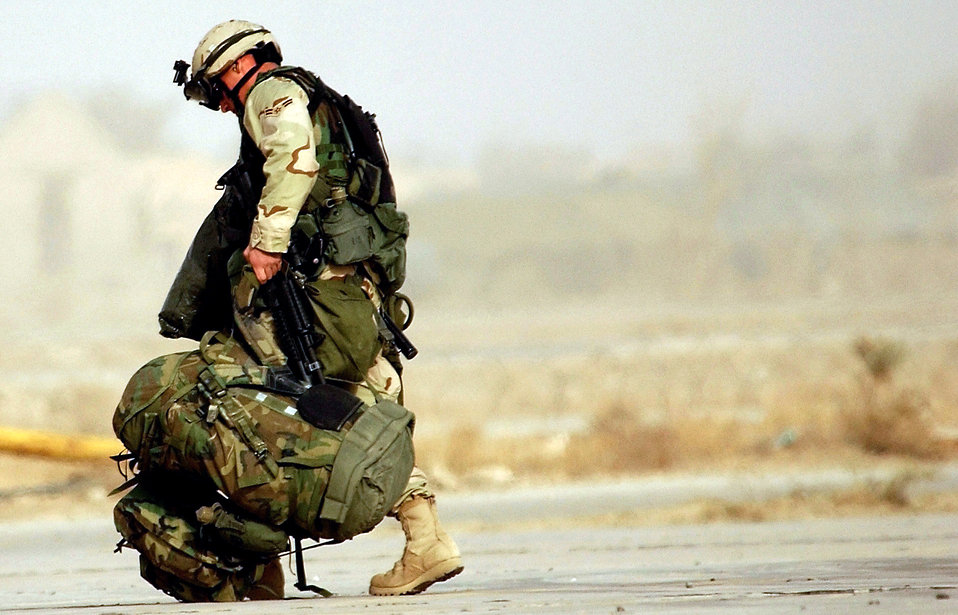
Troops arrive

OPERATION IRAQI FREEDOM -- A U.S. Air Force Security Forces troop gets off a C-130 Hercules aircraft at an undisclosed location. Operation Iraqi Freedom is a multi-national coalition effort to liberate the Iraqi people, eliminate Iraq's weapons of mass destruction and bring an end to the regime of Saddam Hussein.